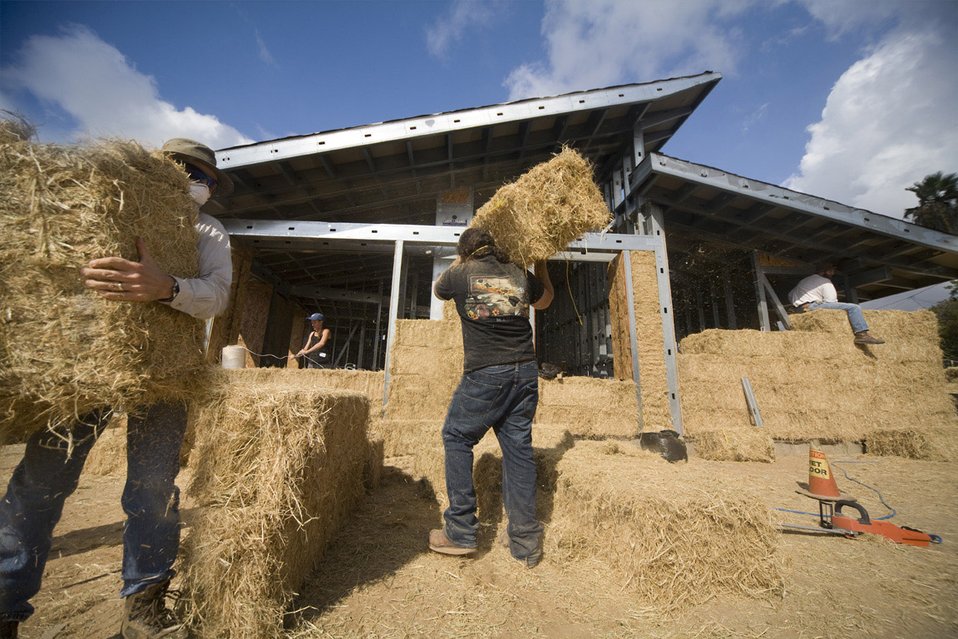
Uploaded by request of Jenna Close

Taken in San Diego, California

The Friends Center is the first public straw bale structure to be approved by the City of San Diego. Built with straw bales for insulation, the structure combines many eco-friendly techniques to reduce its carbon footprint. Private and public green building is on the rise in this area of California.